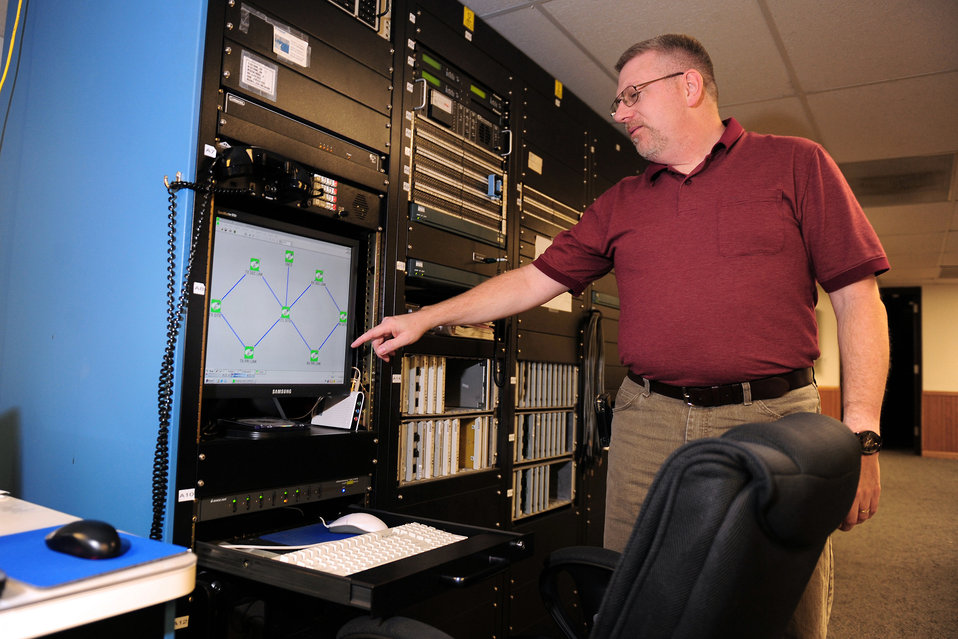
Rural communications site has global mission

Dave Clingerman explains how he monitors antennas for the Elkhorn and Scribner Communication Sites Nov. 5, 2009, from a detached facility located near Elkhorn, Neb. Mr. Clingerman is a telecommunications specialist with the 55th Strategic Communications Squadron from Offutt Air Force Base, Neb.